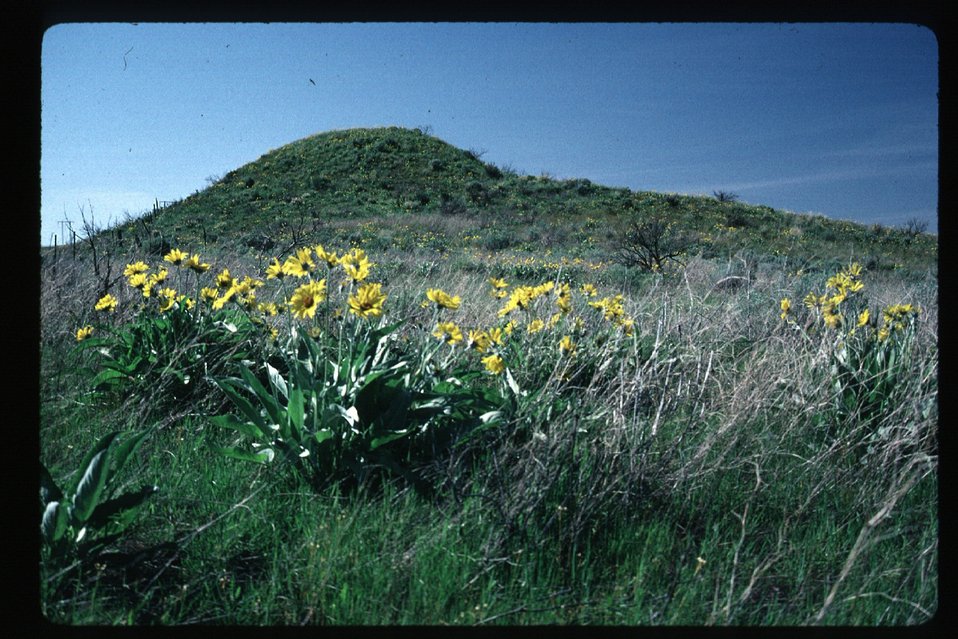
Arrowleaf Balsum Root Balsamorhiza Sagitata Scenic Wildflowers Vegetation Grass and brush USRD Upper Snake River District